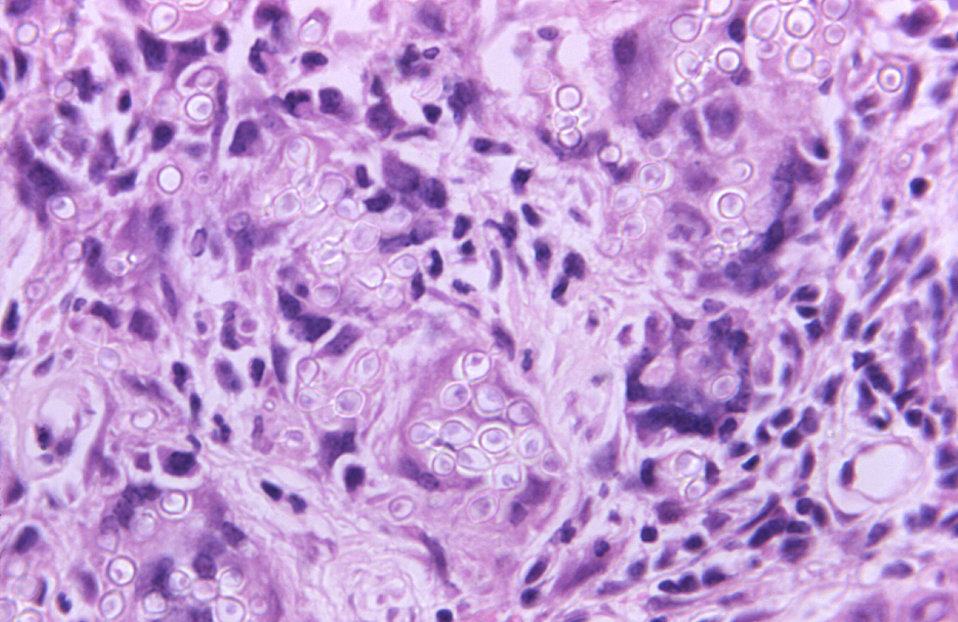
Under a magnification of 500X, this photomicrograph of a Florida dolphin tissue sample, revealed some of the histopathologic cytoarchitectural changes associated with what was determined to be a case of lobomycosis due to the fungus, Lacazia loboi, formerly known as Loboa loboi. Usually, lobomycosis is seen in humans and dolphins.